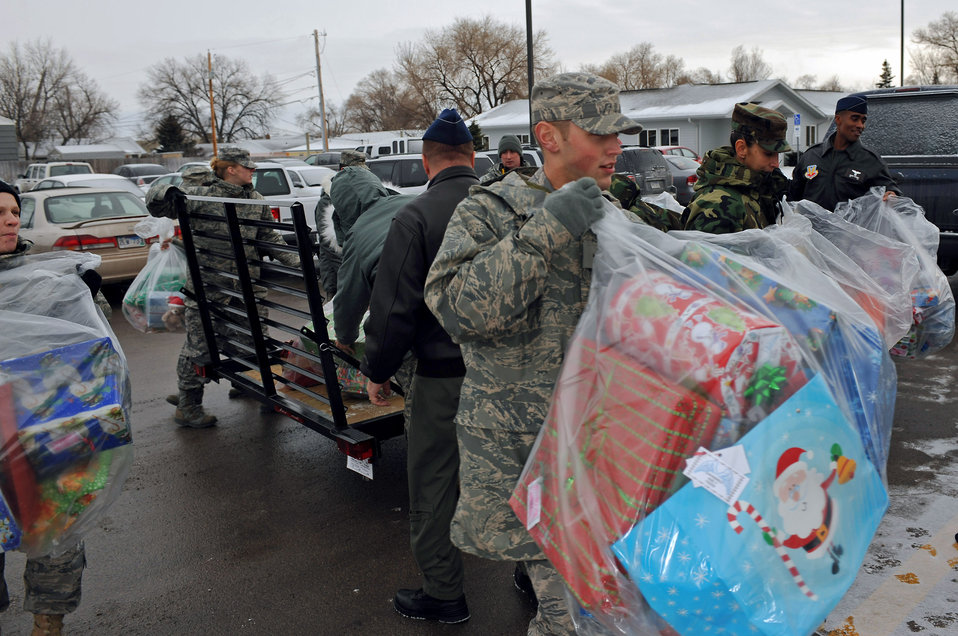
Santa's helpers

Airman 1st Class Zachary Aichele, with the 28th Operational Support Squadron at Ellsworth Air Force Base, S.D, carries a bag of presents into a child care center in nearby Rapid City. Airmen from the 28th OSS helped Santa distribute the gifts to kids at the center.